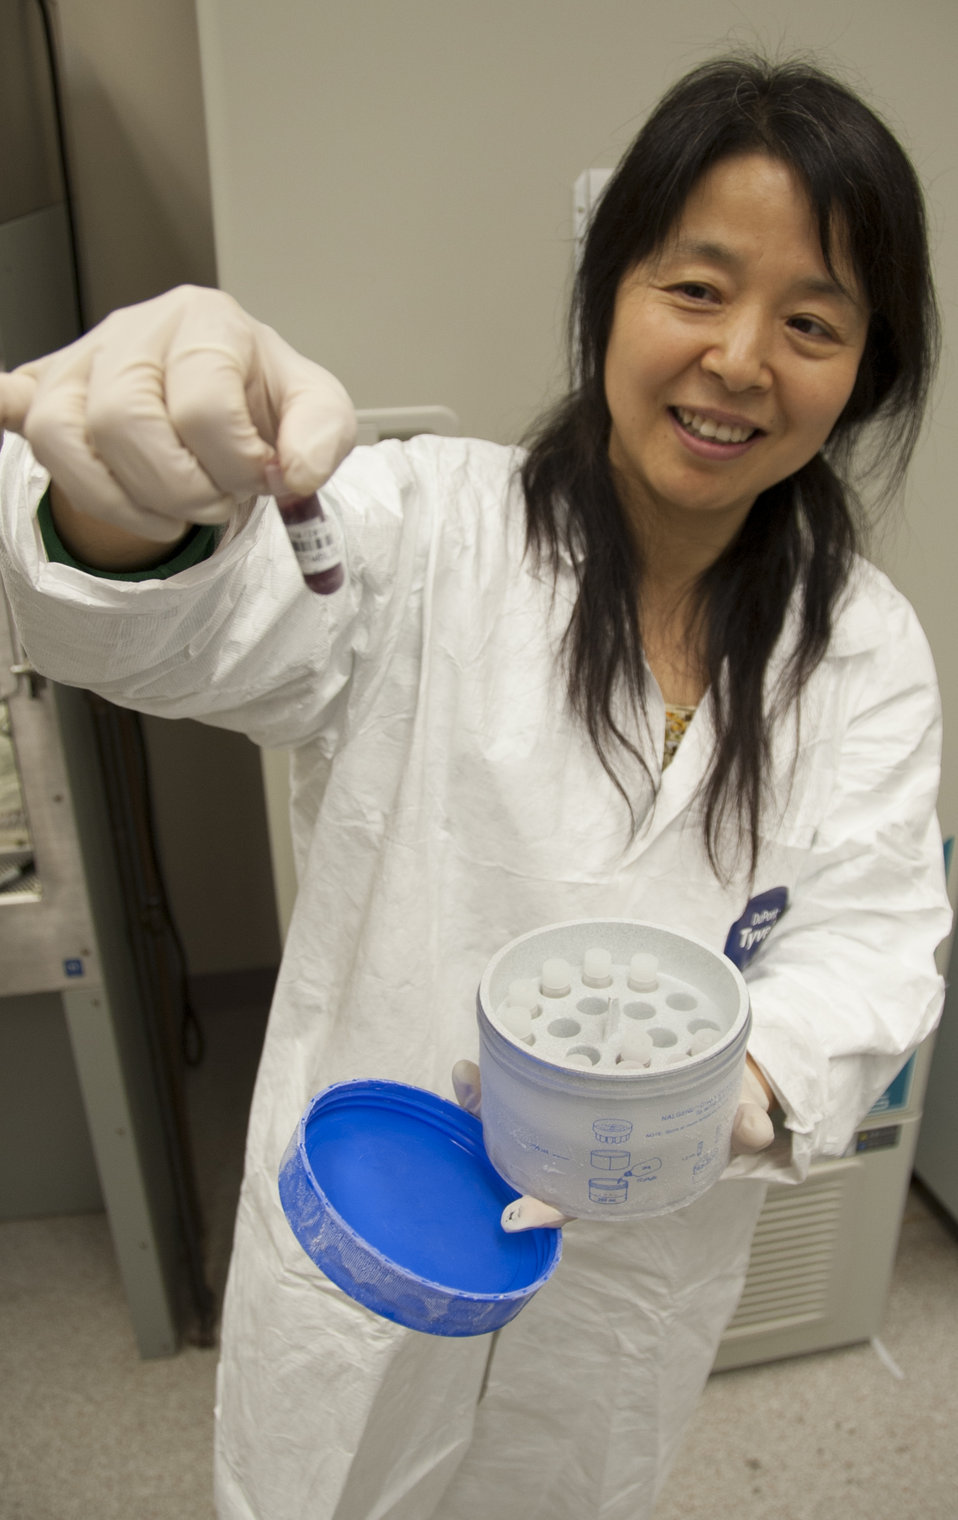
Blood Research: Saving Lives (8444)

Meihong Liu, Ph.D., working at FDA’s Office of Blood Research and Review, prepares to freeze blood cells in a special container designed to control the freezing rate. FDA is responsible for the safety of our nation’s blood supply and is at the forefront of evaluating and encouraging innovative technologies for protecting it.

Read this Consumer Update to learn more: Advances in Saving Lives with Blood